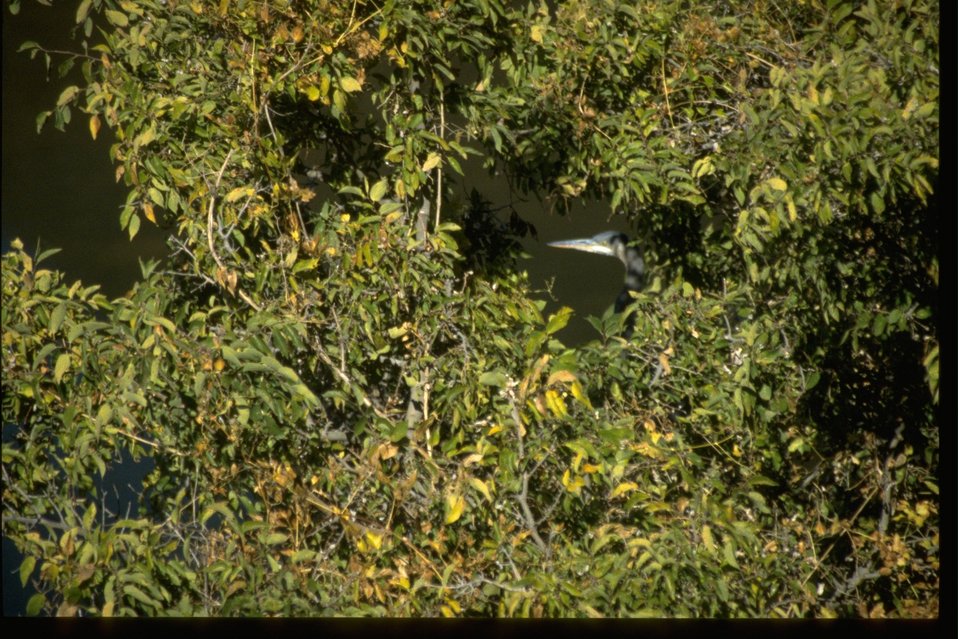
Heron perched in bush with only his/her head visible along the John Day River.